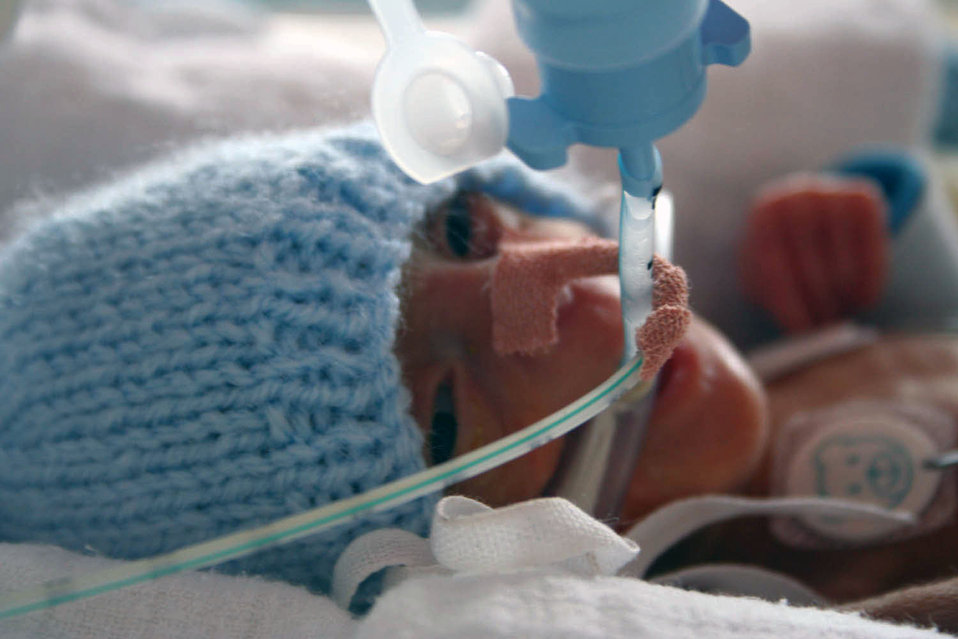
Premature twin's fight for life leaves lasting legacy

Eric LeVon Frazier II, one of premature twins born Sept. 6, died Dec. 10 at Norfolk and Norwich University Hospital in England. Eric and his sister, Alexis Rain Frazier, were born at just 23 weeks and three days gestation period. They were due Jan. 1. This photo of Eric, his parents' favorite, was taken around Thanksgiving. His dad, Tech. Sgt. Barry Frazier of the 100th Air Refueling Wing Legal Office, and his wife, Mandy, said their youngest son taught them to fight and never give up.